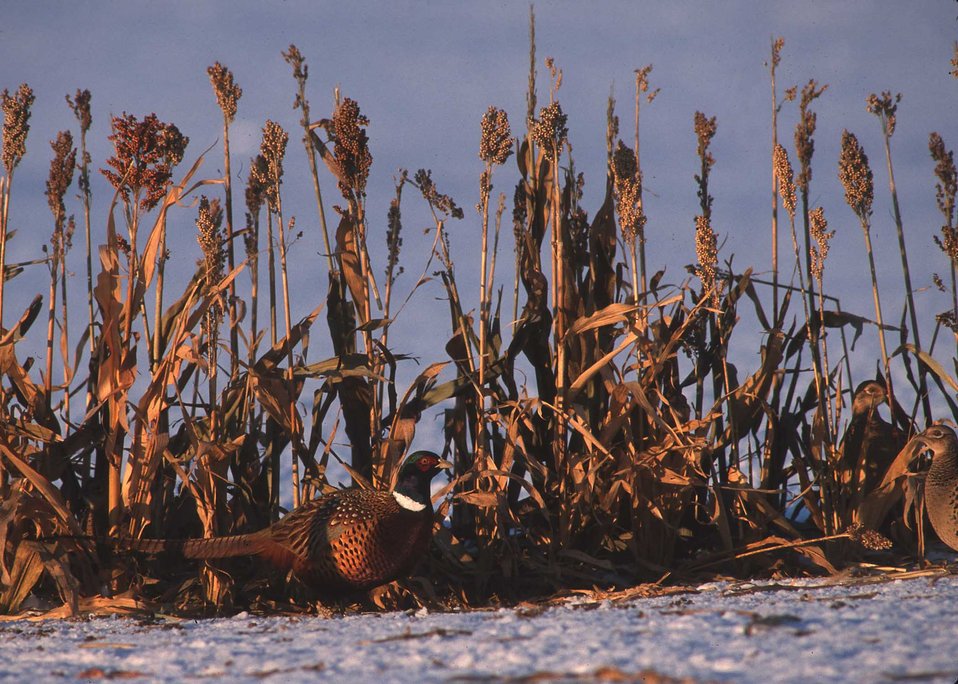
Pheasants and other wildlife species need both food and cover in harsh Iowa winters. It is provided by landowners with both annual and perennial plantings.